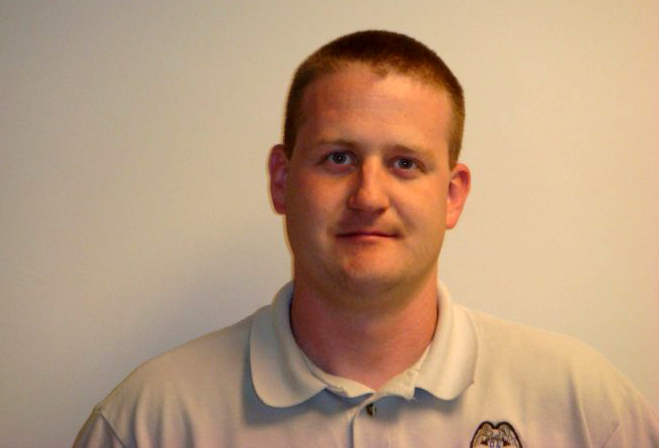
Jeremy Curtis, a Law Enforcement Officer at Tennessee NWR, served as a Staff Sergeant in the U.S. Marine Corps from 1997 to 2001. He then served in the U.S. Army National Guard from 2001 to 2011, including tours of duty in support of Operation Enduring Freedom and Operation Homeland Security.